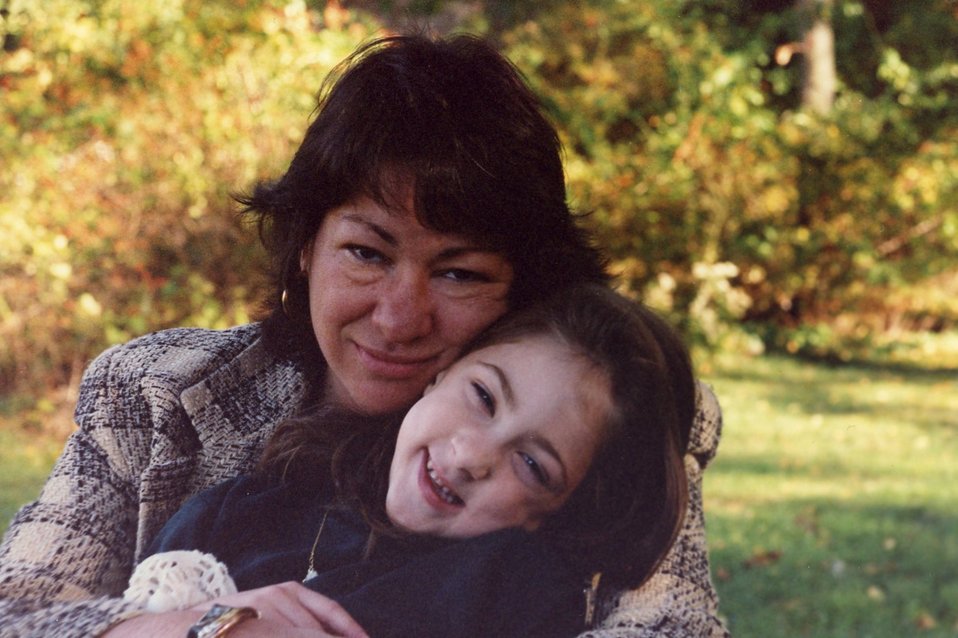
Niece 1

Judge Sotomayor with niece Kylie Sotomayor in upstate New York.